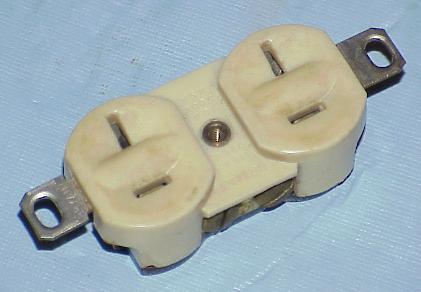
Author = Robert Casey